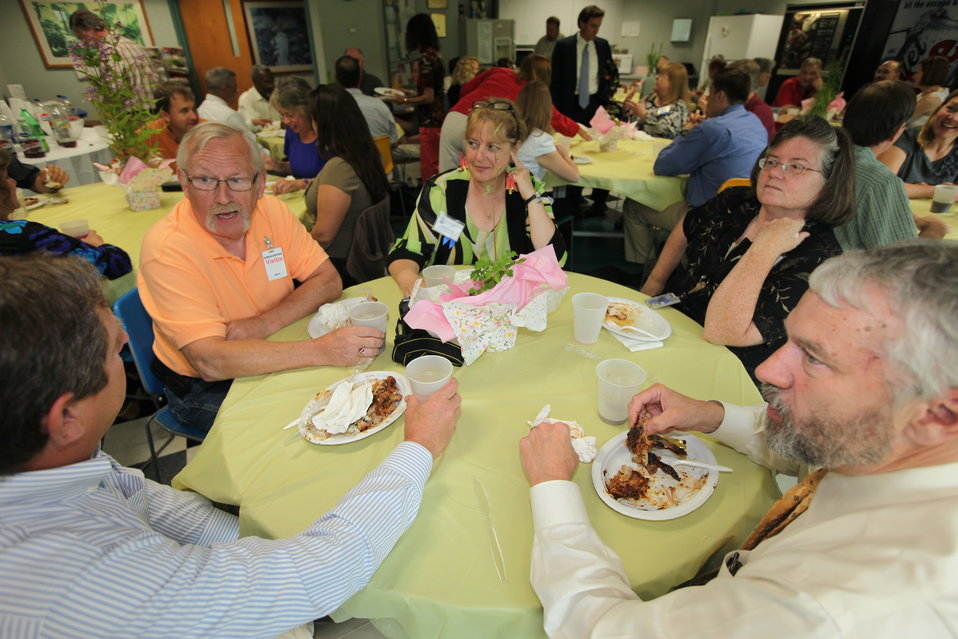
Northeast Region Employee Appreciation Awards

Award winners enjoying lunch before the awards